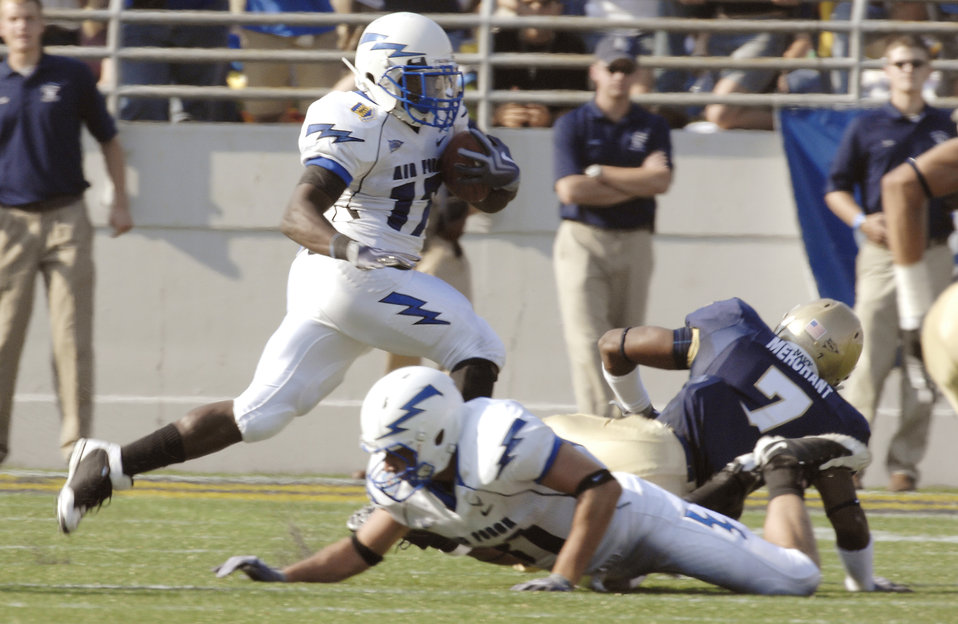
Football: Falcons fall to Midshipmen in overtime

U.S. Air Force Academy running back Asher Clark runs the ball against the U.S.Naval Academy defense Oct. 3, 2009, at Navy-Marine Corps Memorial Stadium in Annapolis, Md. The Midshipmen won the game 16-13, with a field goal in overtime.